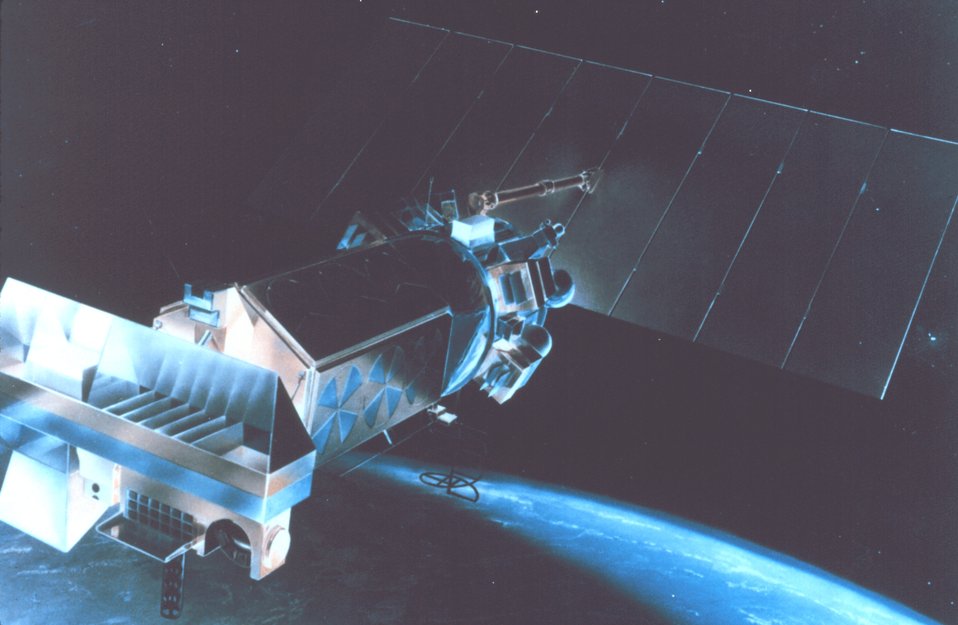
Graphic of TIROS-N satellite in orbit.